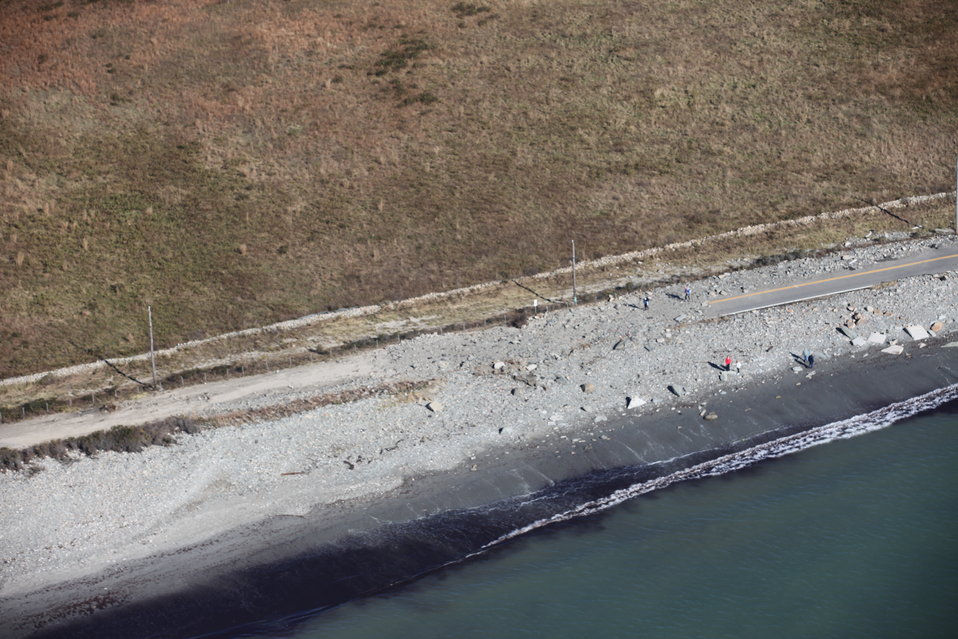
Debris on entrance road to Sachuest Point National Wildlife Refuge (RI)

Road debris and over wash on Sachuest Point road along the entrance to Sachuest Point National Wildlife Refuge and Kettle Pond Visitor Center in the aftermath of Hurricane Sandy.